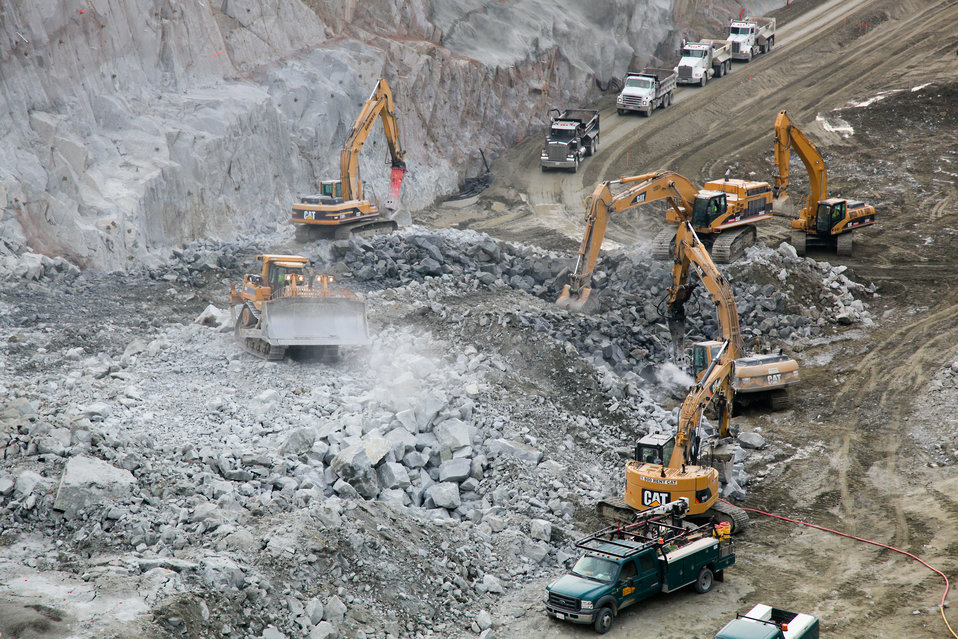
Excavation and rock reinforcement continues at Folsom Joint Federal Project

Excavation of Folsom Dam’s new auxiliary spillway continues in Folsom, Calif., Dec. 29, 2011. The spillway will allow Folsom Dam to release water sooner and more safely. The project is part of the Folsom Dam Joint Federal Project, a joint effort of the U.S. Army Corps of Engineers Sacramento District, the U.S. Bureau of Reclamation, the Central Valley Flood Protection Board and the Sacramento Area Flood Control Agency to improve the safety of the dam and reduce flood risk for the greater Sacramento area.